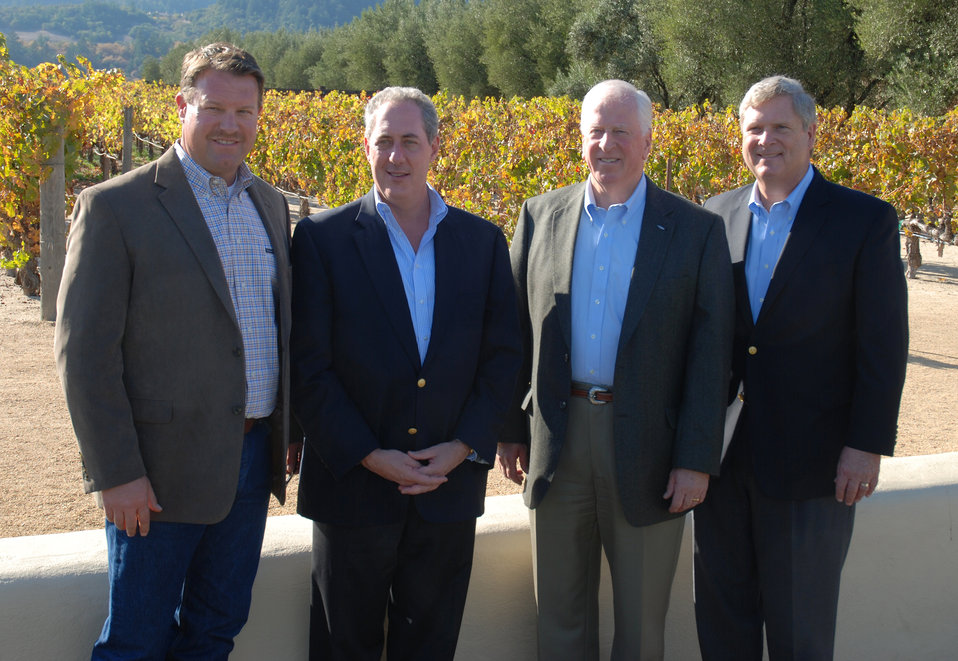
(L to R) Agriculture Secretary Thomas Vilsack, Congressman (CA) Mike Thompson, U.S. Trade Representative Michael Froman, and Dutton Ranch Corporation representative Steve Dutton stand in front of the Mondavi Winery in Napa, CA on Sunday, Nov. 17, 2013 after meeting with California wine growers.